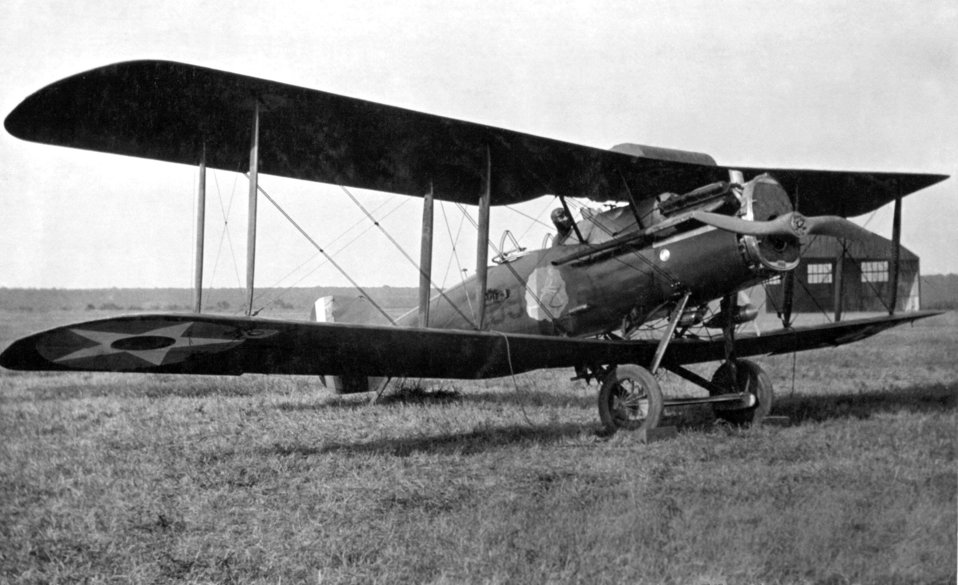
XB-1A bomber

An XB-1A bomber from the 13th Bombardment Squadron in 1918. The 13th BS became known as